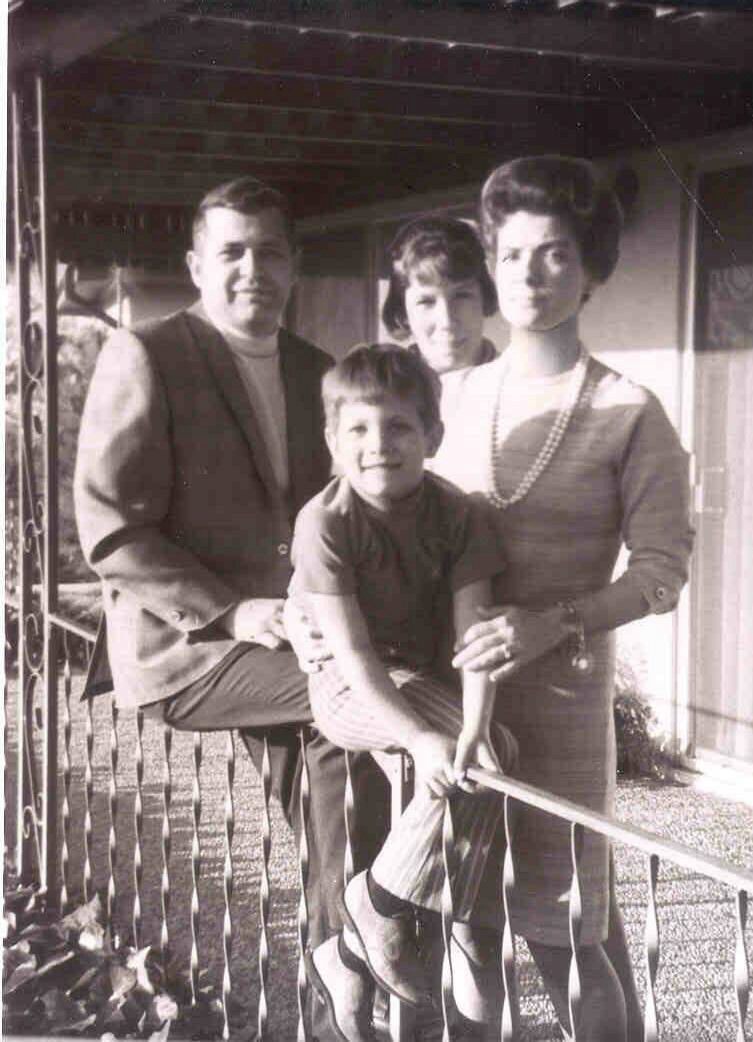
Former U-2 pilot posthumously awarded Silver Star

(From left) Francis Gary Powers poses with his son Gary Jr., daughter Dee and wife Sue in 1970. Gary Jr. and Dee accepted the Silver Star medal on behalf of their father from Air Force Chief of Staff Norton A. Schwartz in a ceremony June 15, 2012, at the Pentagon.